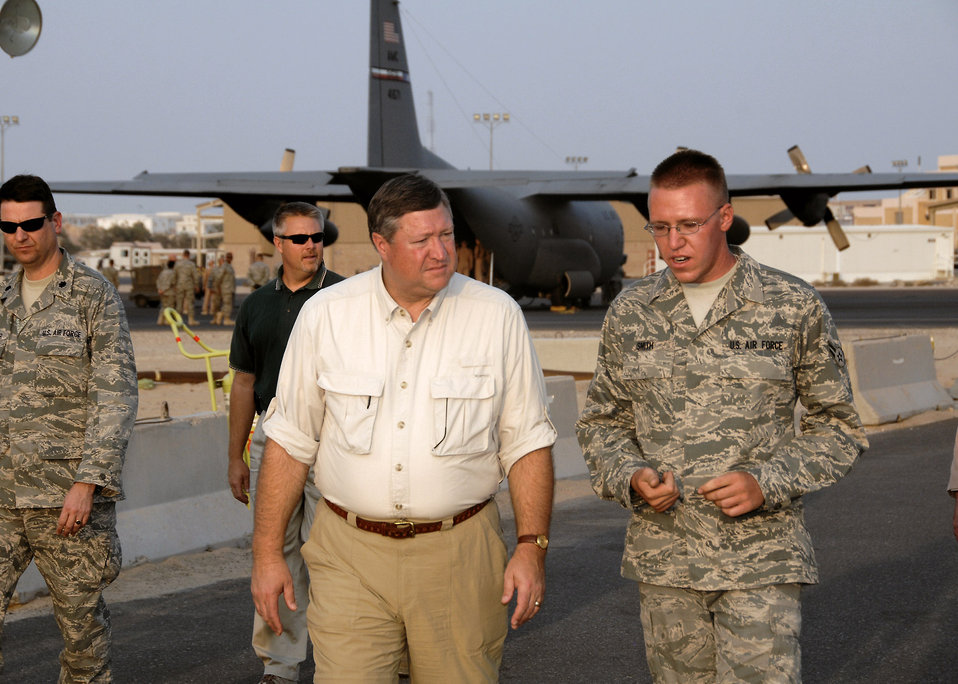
386th AEW welcomes SECAF

Airman 1st Class Paul Smith briefs Secretary of the Air Force Michael B. Donley on the flightline fuels storage area Oct. 14 at an air base in Southwest Asia. Secretary Donley visited with Airmen from the 386th Air Expeditionary Wing, coalition partners and sister services during his visit. Airman Smith is a 386th Expeditionary Logistics Readiness Squadron fuels technician.